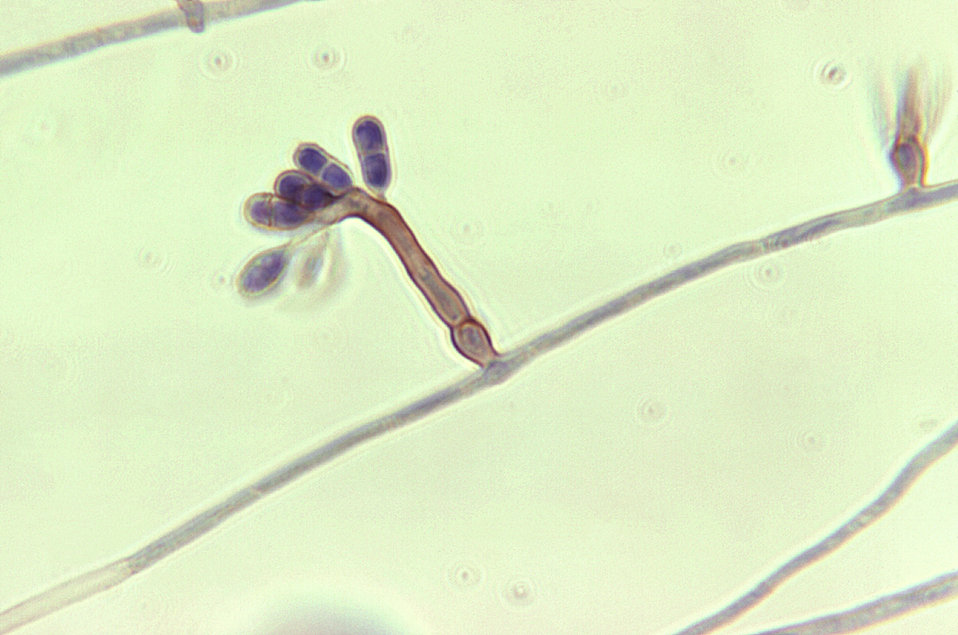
Magnified 1125X, this photomicrograph reveals some of the ultrastructural morphology of a cluster of Ochroconissp. conidia, formerly known as Dactylaria.